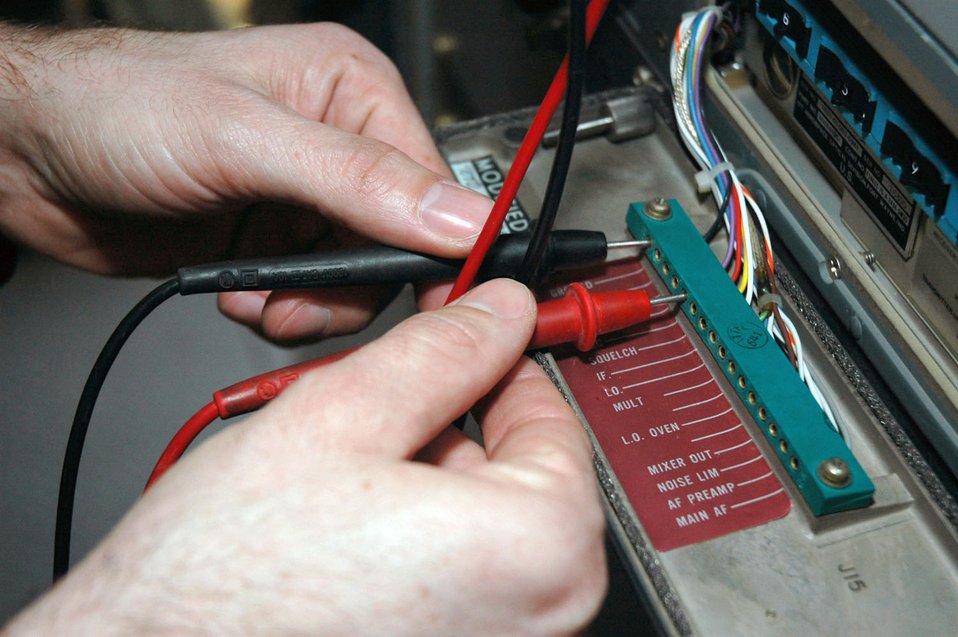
Keeping Tuzla airfield operational

TUZLA AIR BASE, Bosnia and Herzegovina (AFPN) -- Staff Sgt. Mark Beecroft gets a voltage reading on a receiver while performing an annual certification on air traffic control and landing systems. He is assigned to the 401st Air Expeditionary Wing.